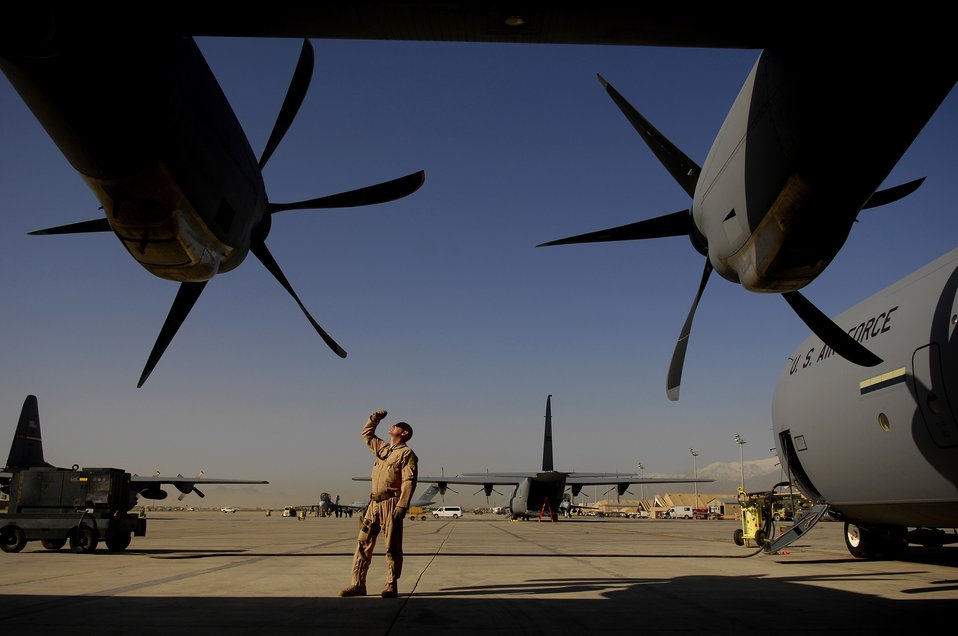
Checking it out

Staff Sgt. Brian Miliefsky checks out a C-130J Hercules aircraft April 29 for a mission at Bagram Air Base, Afghanistan. Sergeant Miliefsky is a loadmaster assigned to the 774th Expeditionary Airlift Squadron and deployed from the California Air National Guard's 115th Airlift Squadron at Port Hueneme, Calif.